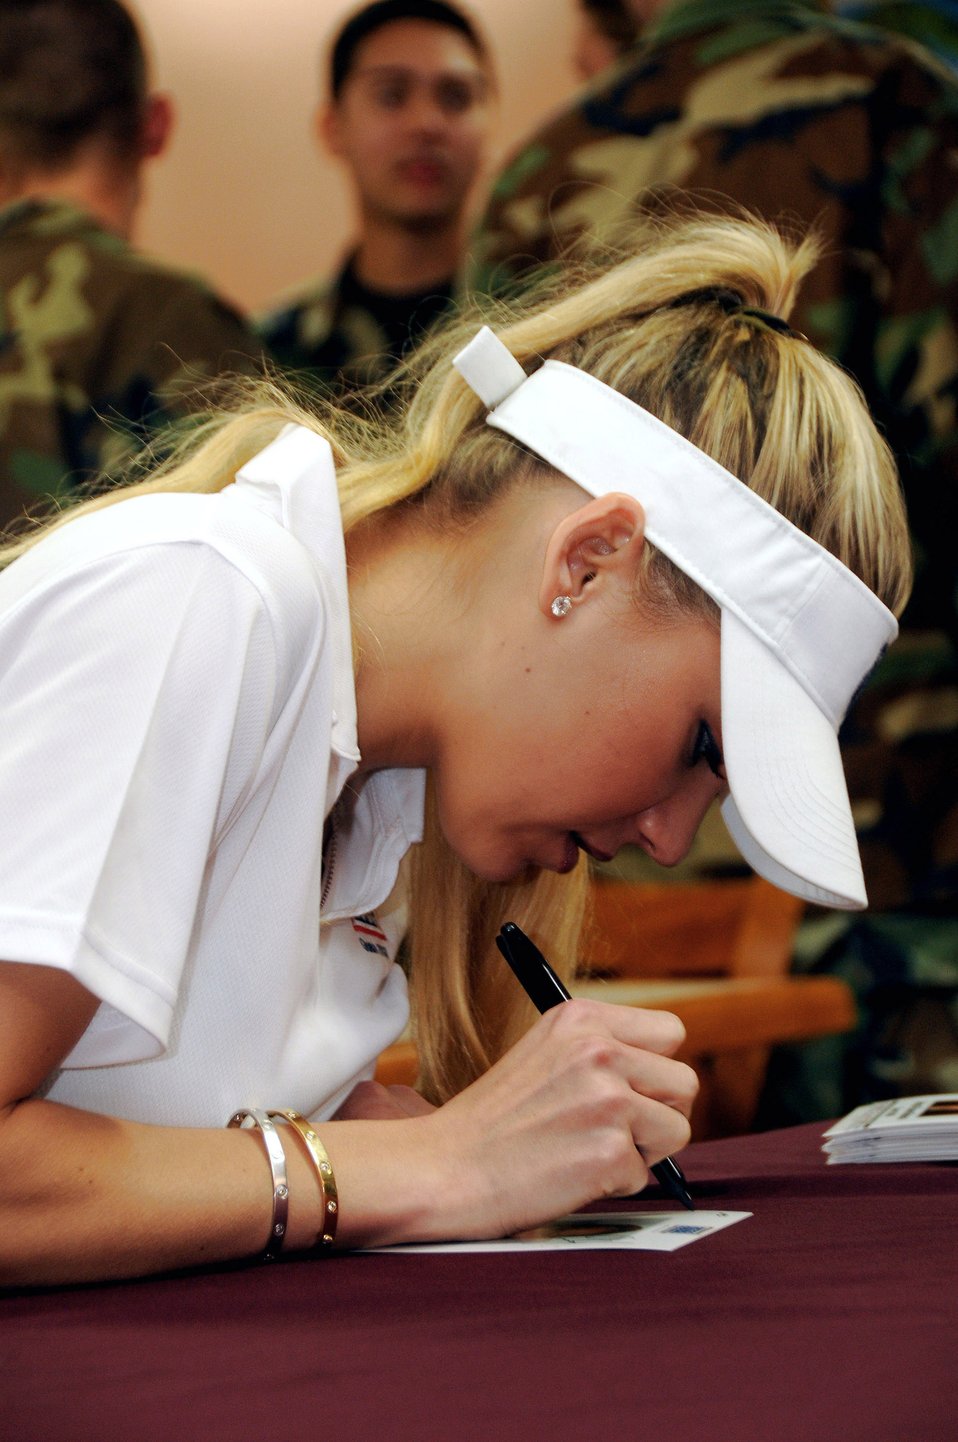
Anna Kournikova visits Andersen

Anna Kournikova signs autographs after a luncheon with Airmen Oct. 29 at the Magellan Inn at Andersen Air Force Base, Guam. Her tour was sponsored by the USO to boost morale of the military members on Guam.